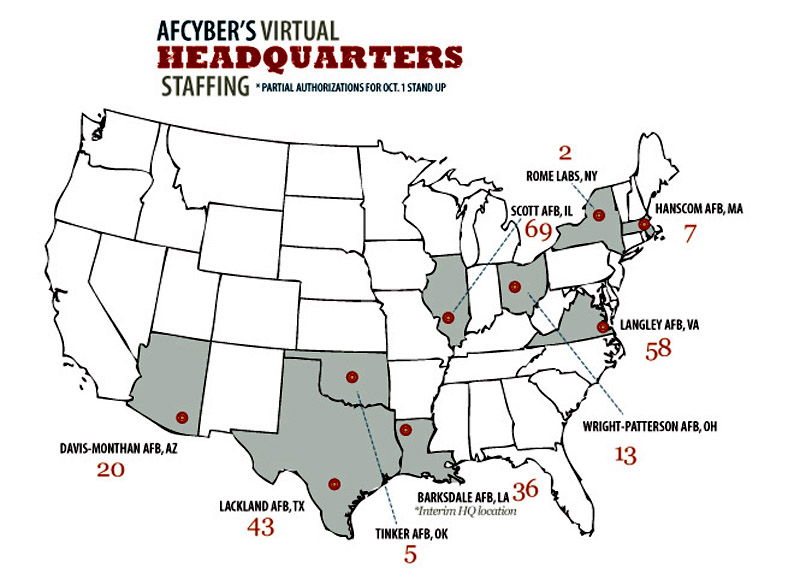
AFCYBER headquarters staff to operate virtually

Shown are the partial manpower authorizations needed for Air Force Cyber Command officials to declare initial operations capabilities by Oct. 1. The command will operate virtually among these distributed locations until the final basing decision has been made. It is not know whether the authorizations will stay in place, or move to a final location, or a combination of the two.